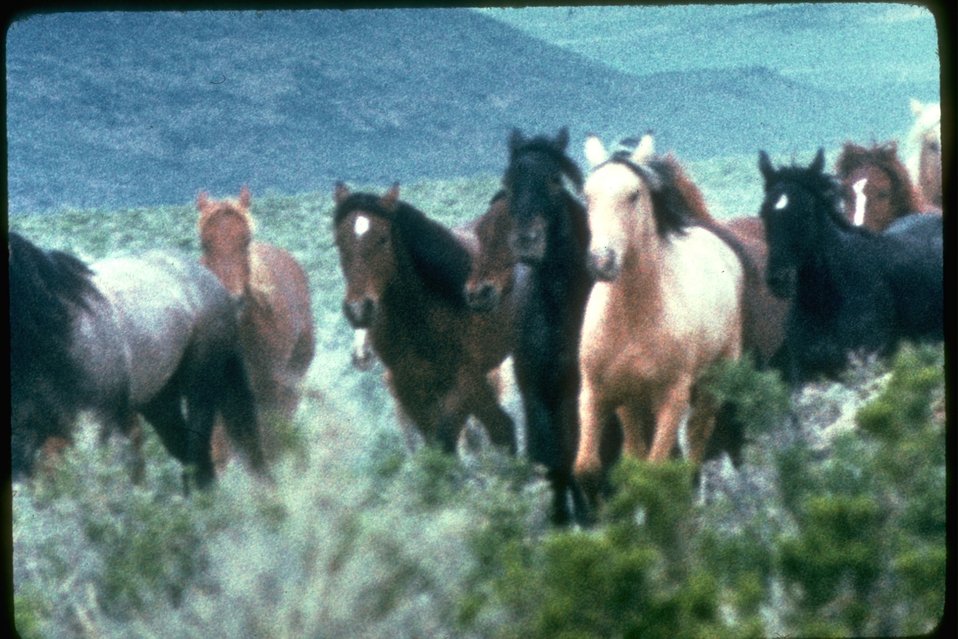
Wildhorses